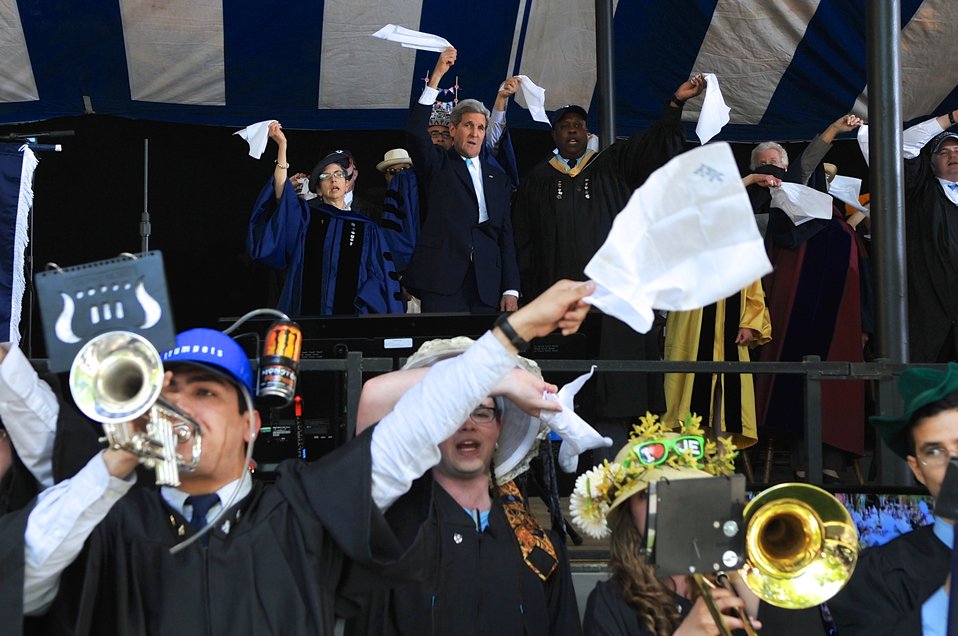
Secretary Kerry Waves White Handkerchief in Yale University Tradition

U.S. Secretary of State John Kerry waves a white handkerchief as the Class of 1966 member joins in a Yale University tradition after he addressed Class Day ceremonies in New Haven, Connecticut, on May 18, 2014.